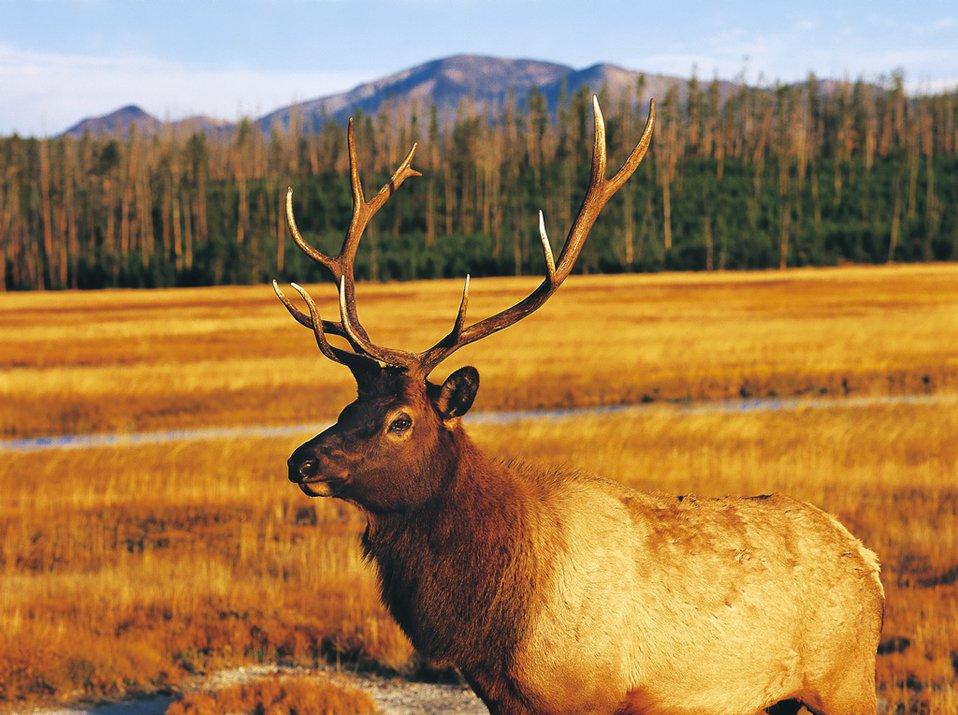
Uploaded by request of Tao Shi

Photo taken at Yellowstone National Park, Wyoming

Elk